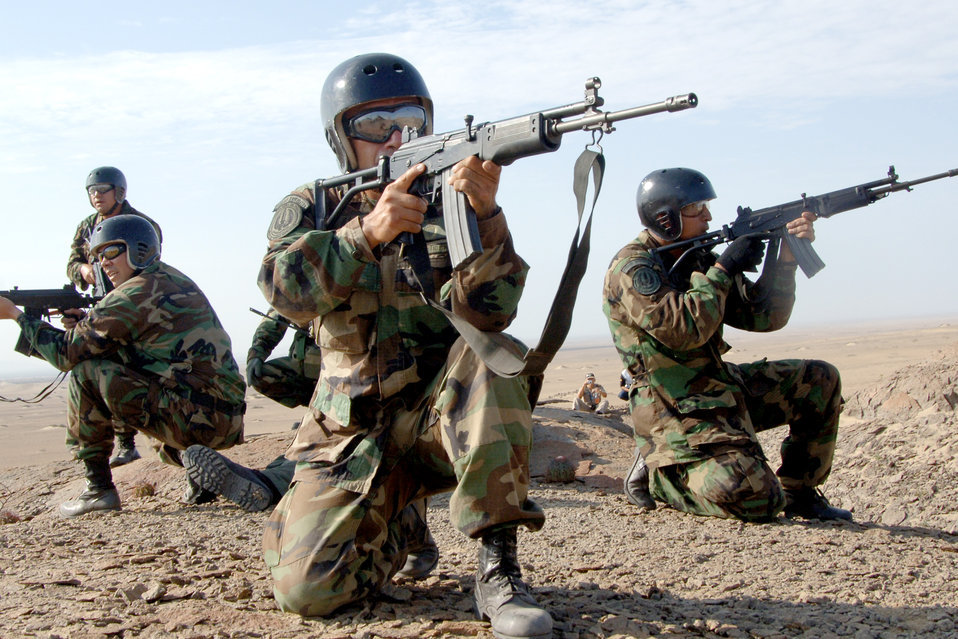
U.S., Peruvian Air Forces reach milestone

Peruvian special forces secure an exercise area as U.S. and Peruvian Air Forces perform a joint combat search and rescue exercise Feb. 14 near Chiclayo, Peru. The exercise was part of Falcon and Condor 2007, a joint exercise between the U.S. and Peruvian Air Forces.